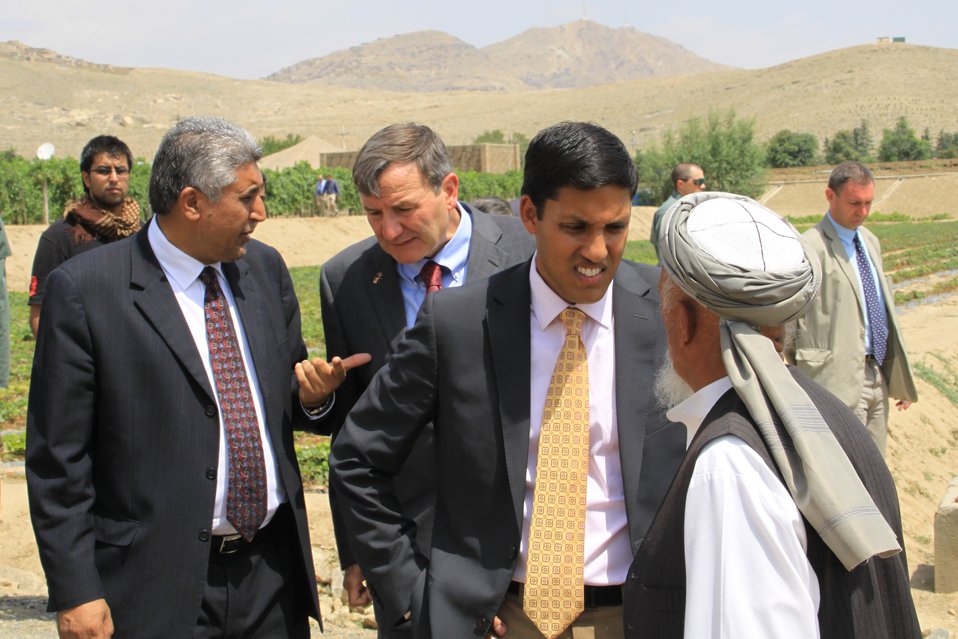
Badam Bagh Farm